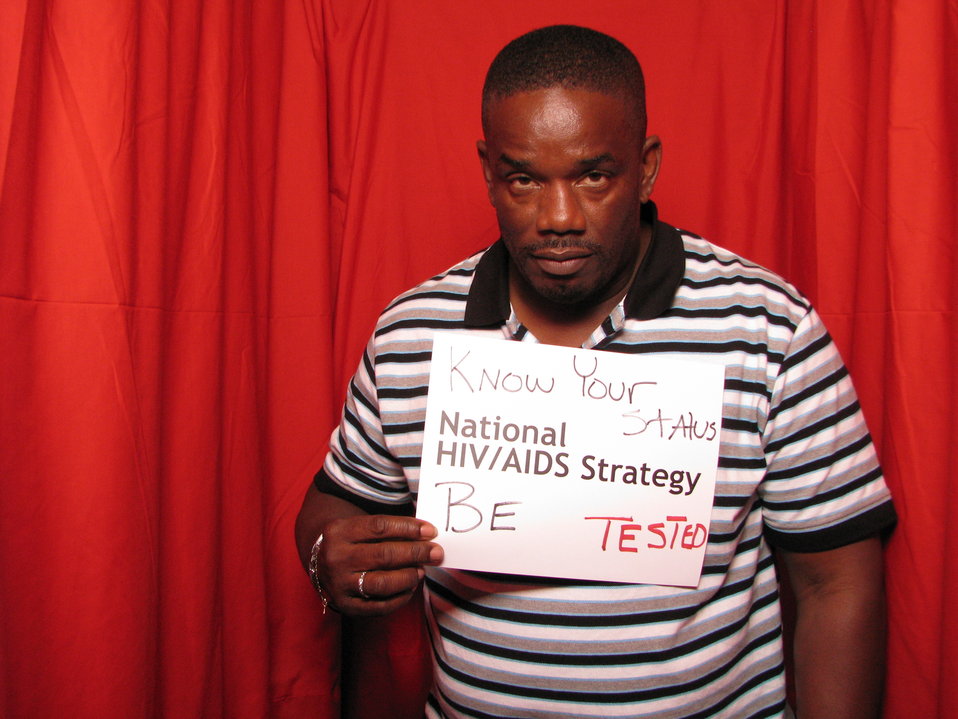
Know Your Status - National HIV/AIDS Strategy - Be Tested

From the AIDS.gov photo booth at the U.S. Conference on AIDS, September 2010 (Orlando, FL).